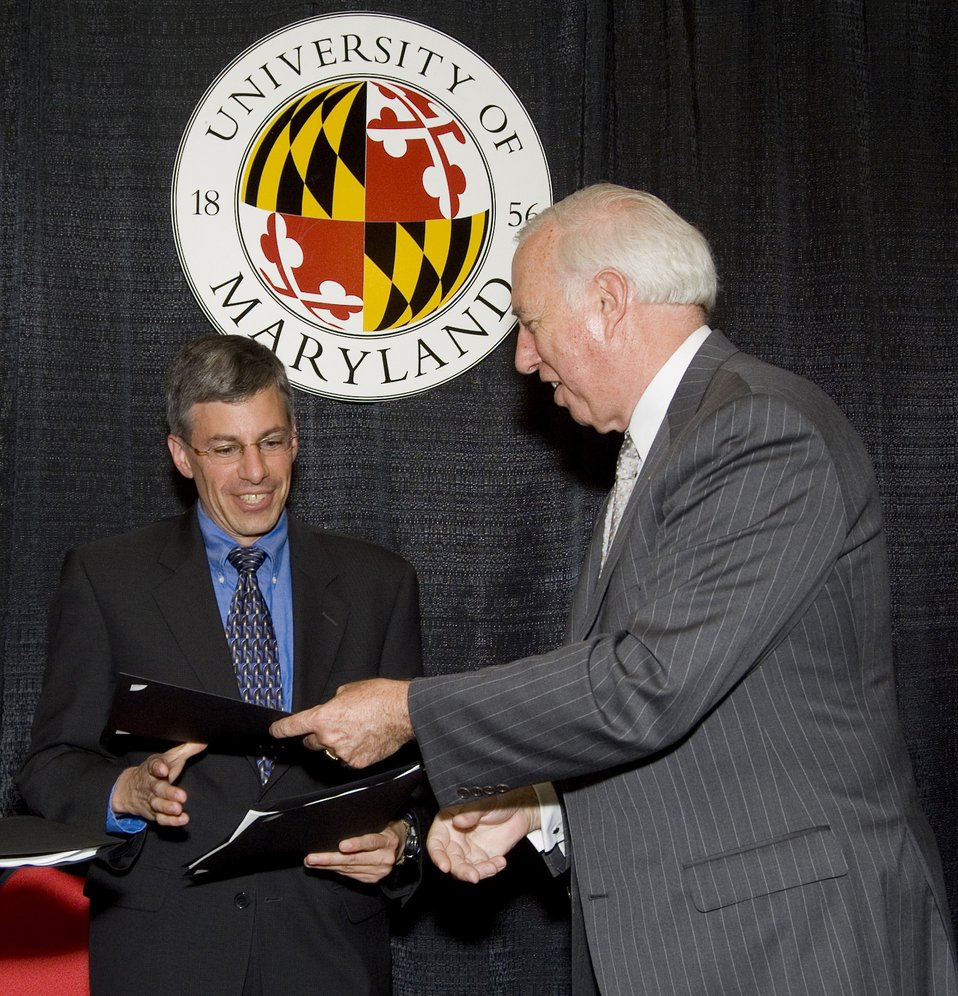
Director Jeffrey and C.D. Mote Jr.

William Jeffrey (NIST), and C.D. Mote Jr., (UM) at the ceremony held for the signing of a memorandum of understanding establishing the Joint Quantum Institute at the University of Maryland, College Park.